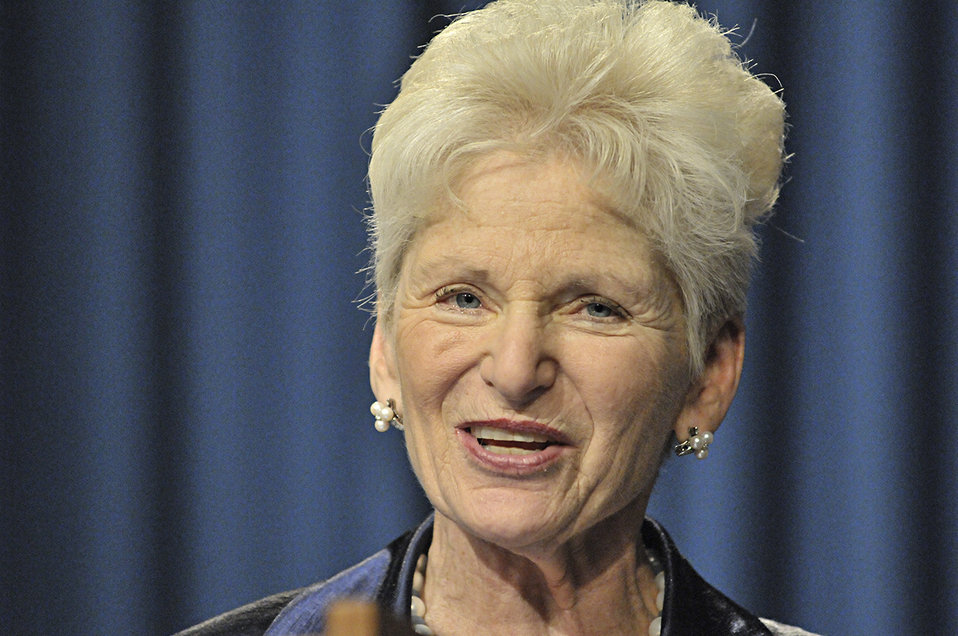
Panel: Opportunities and Solutions

Edie Fraser, CEO of STEMConnector and senior consultant to Diversified Search, moderates the Opportunities and Solutions panel on September 24, 2013.